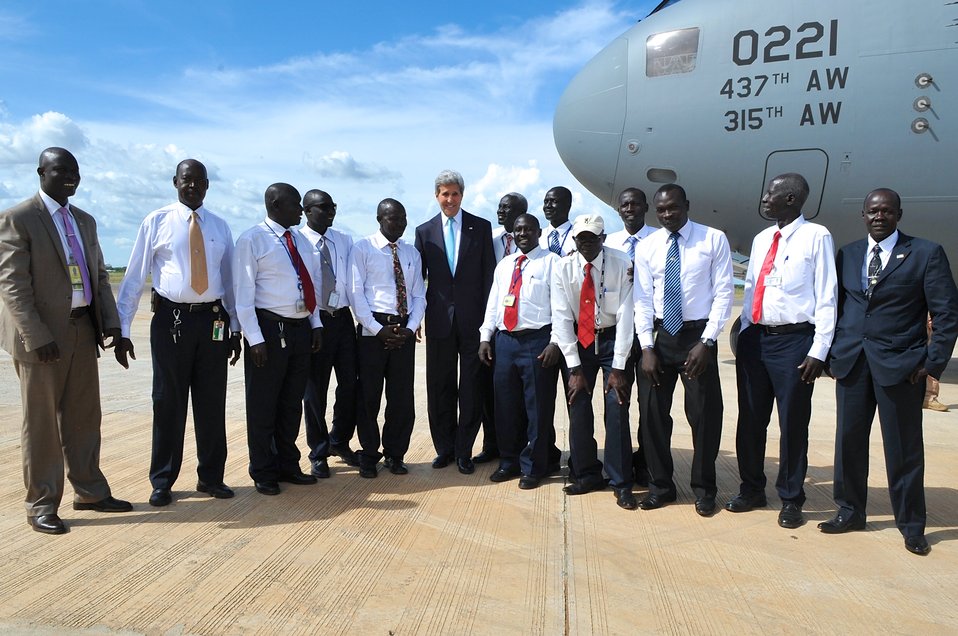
Secretary Kerry Poses With Local Motor Pool Who Drove Him in South Sudan

U.S. Secretary of State John Kerry poses with the local drivers who drove him during his visit to Juba, South Sudan, on May 2, 2014.